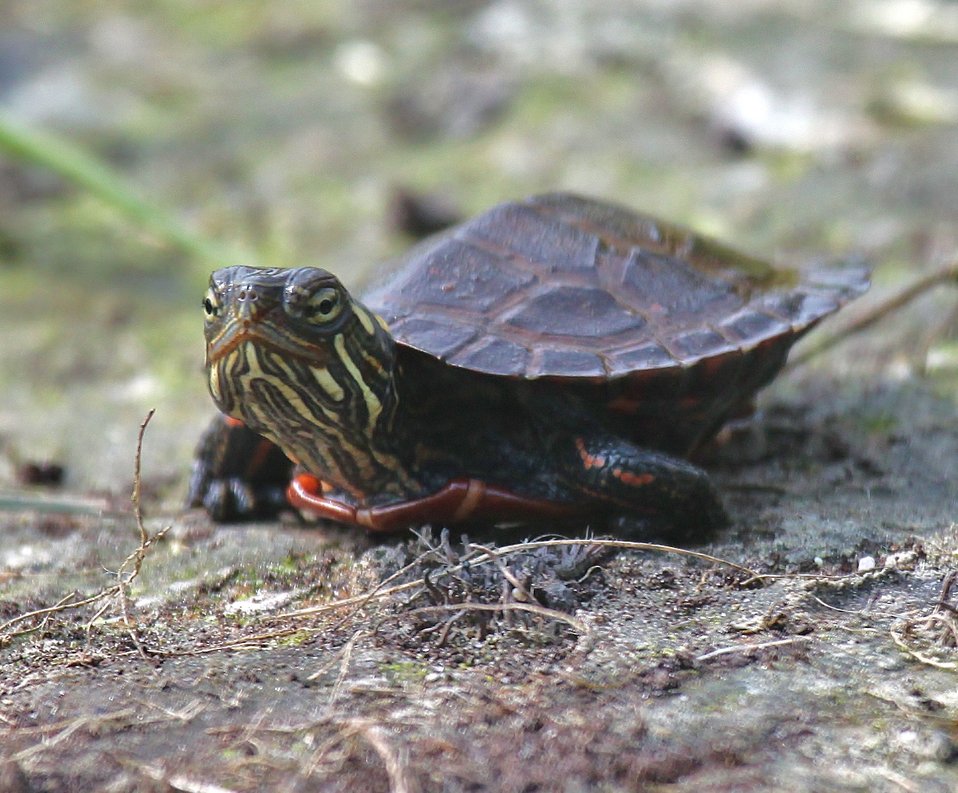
Hatchling Painted Turtle

Baby painted turtle at Missisquoi National Wildlife Refuge.